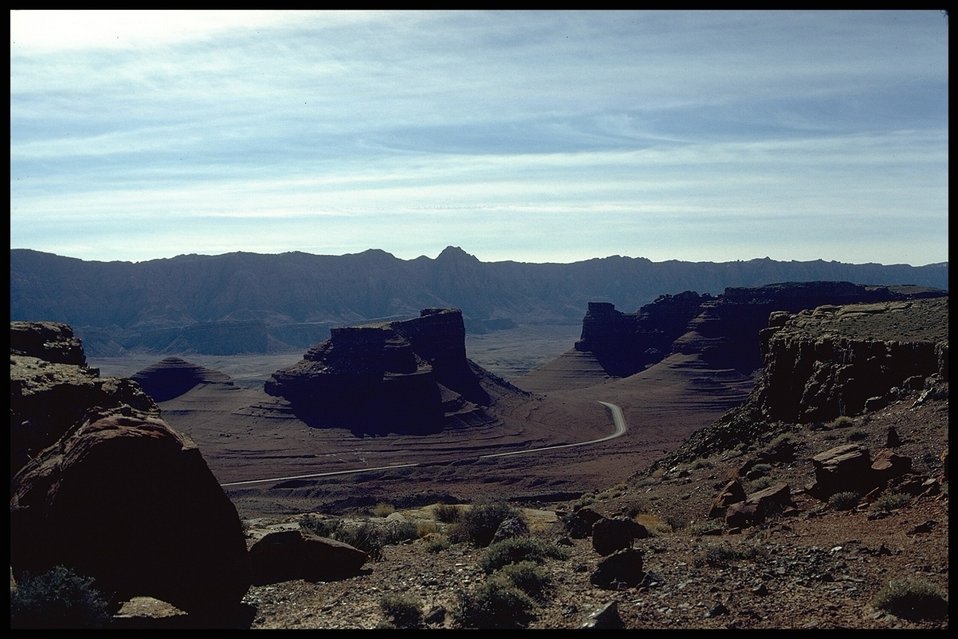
A road winds through an Arizona valley. Cloud covered sky in the background.